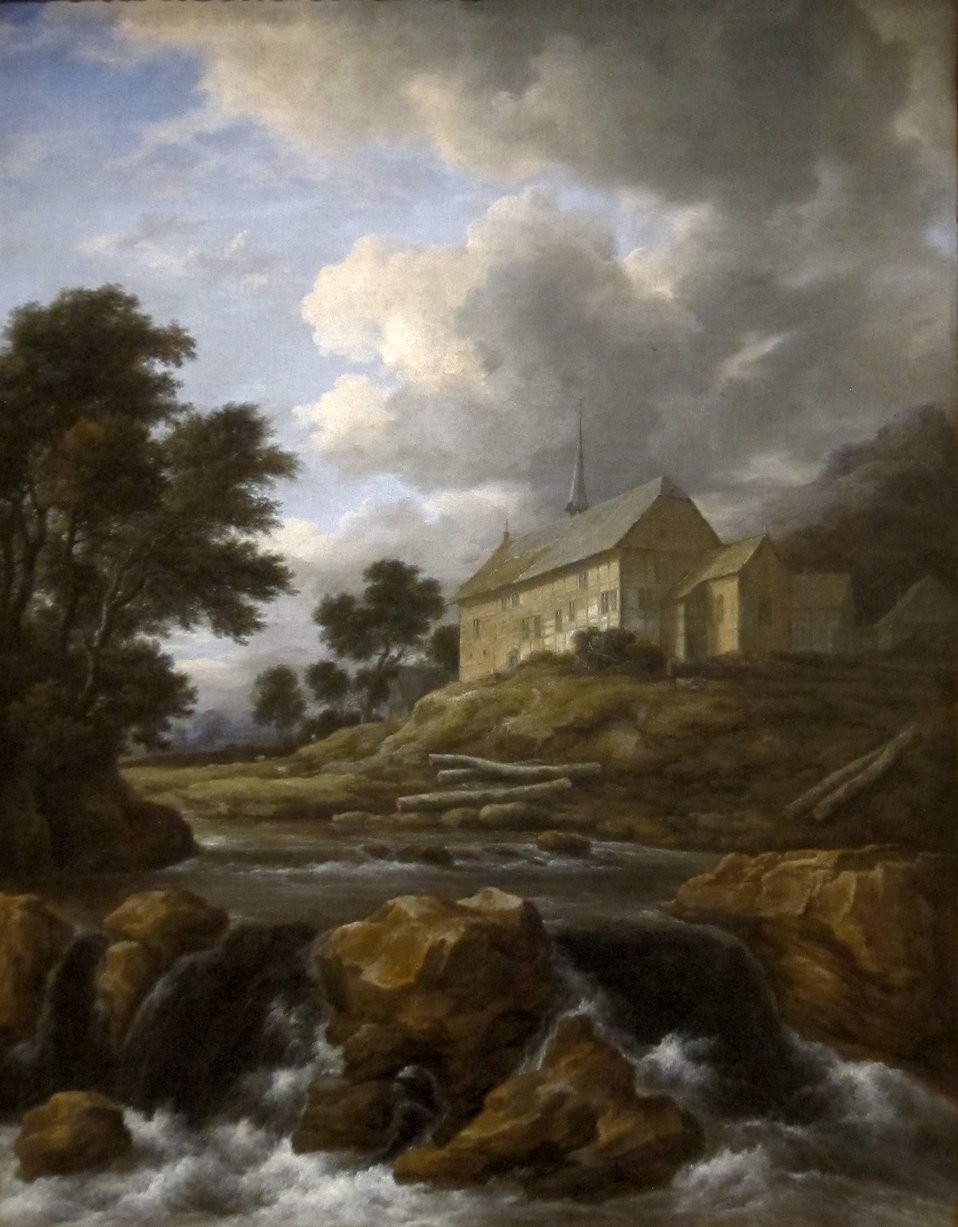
'Landscape with a Church by a Torrent', oil on canvas painting by Jacob van Ruisdael, c. 1670